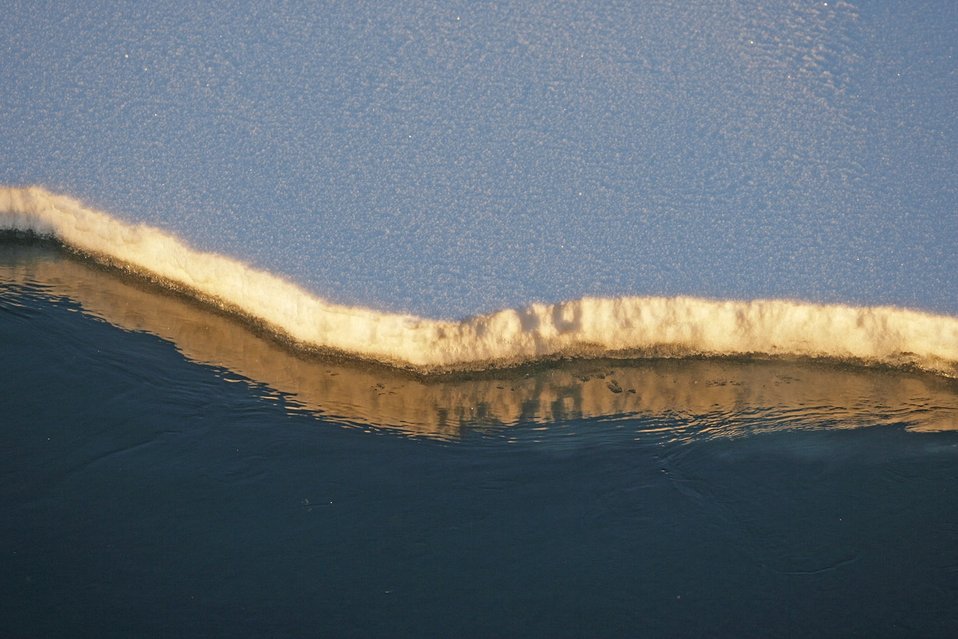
Along the edge of the pack ice.